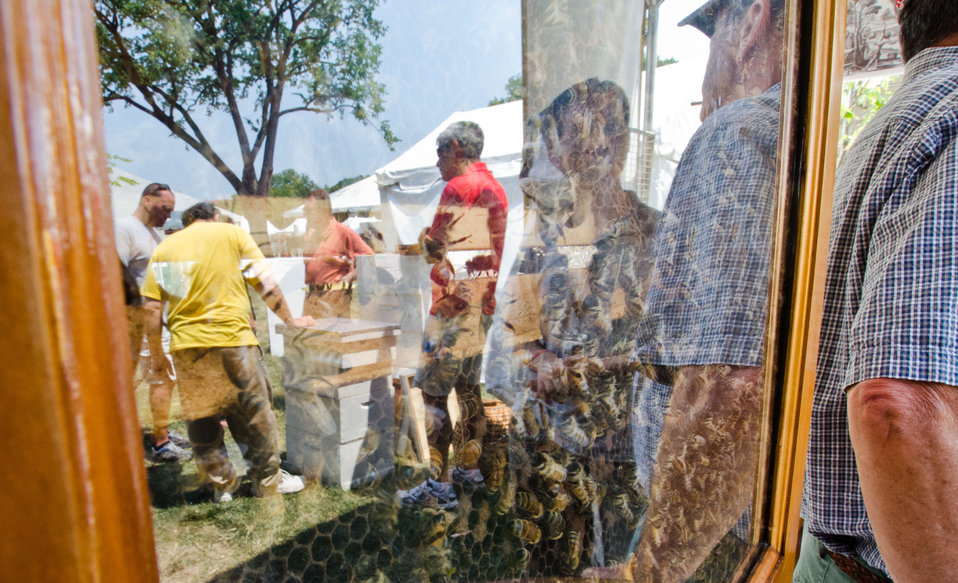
Montgomery County Beekeeper Association, amateur bee keeper Dave Moynihan, right, is seen reflected in a glass encased bee colony as he talks to visitors about bee life cycle, agricultural importance and honey products; while fellow amateur beekeeper Marc Hoffman, yellow shirt, talks about modern bee hives at 2012 Smithsonian Folklife Festival, Thursday, June 28, 2012 on the National mall in Washington, D.C. One of the three themes this year is “Campus and Community.” It celebrates the 150 years of the USDA and the Land-Grant University System. The U.S. Department of Agriculture (USDA) and the Land-Grant system extend education across the country, contributing to American agriculture success and rural prosperity. “Campus and Community” has demonstrations, discussions, hands-on activities, and entertainment to that showcase the many ways that this partnership works to improve American agriculture and rural life.